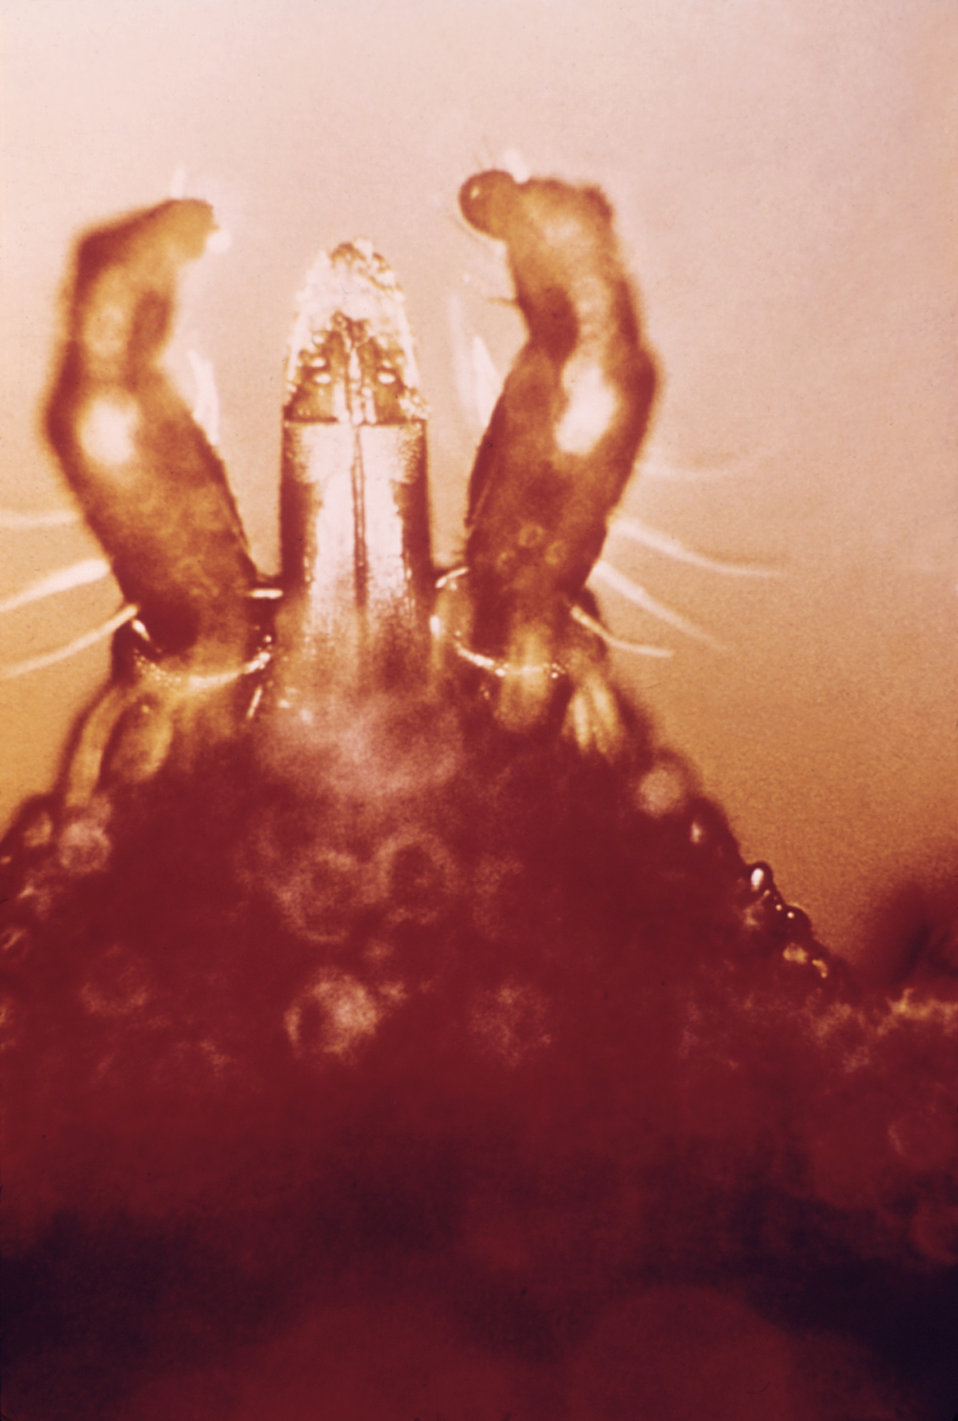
These mouth parts belong to a Argasidae family North American tick with its well developed hypostome, and definite teeth.